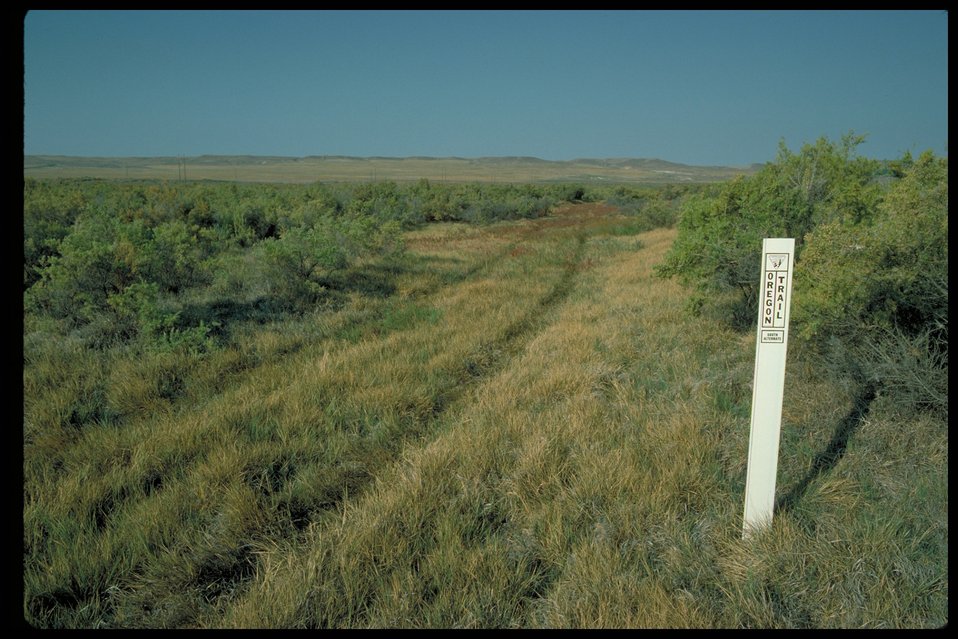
West of Loveridge Bridge Oregon Trail Lower Snake River District